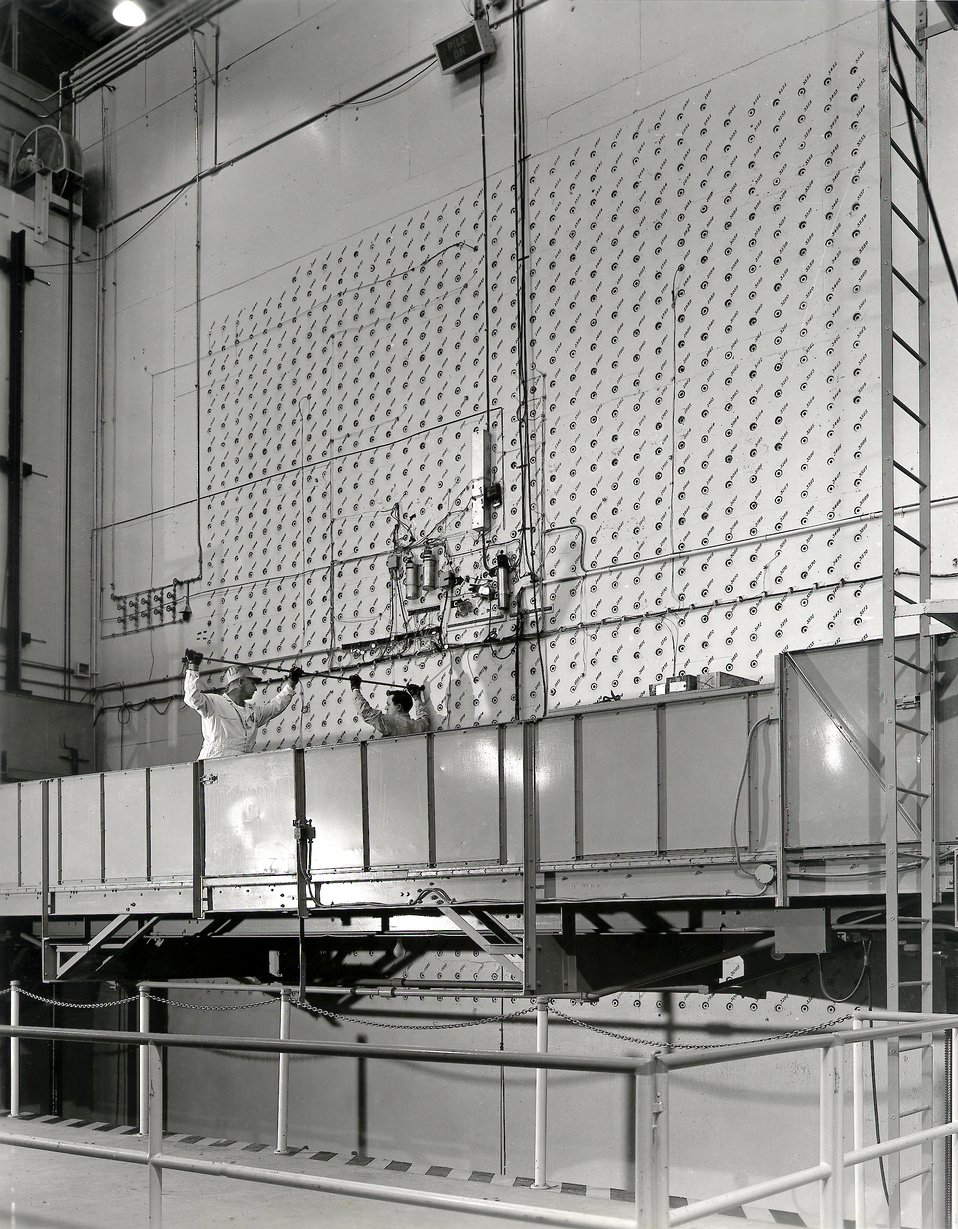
Graphite Reactor Reactor East Loading Face Oak Ridge National Lab. Oak Ridge

7576-1 DOE photo by Ed Westcott

Graphite Reactor
Reactor East Loading Face Oak Ridge National Lab. Oak Ridge Tennessee 1-2-1952